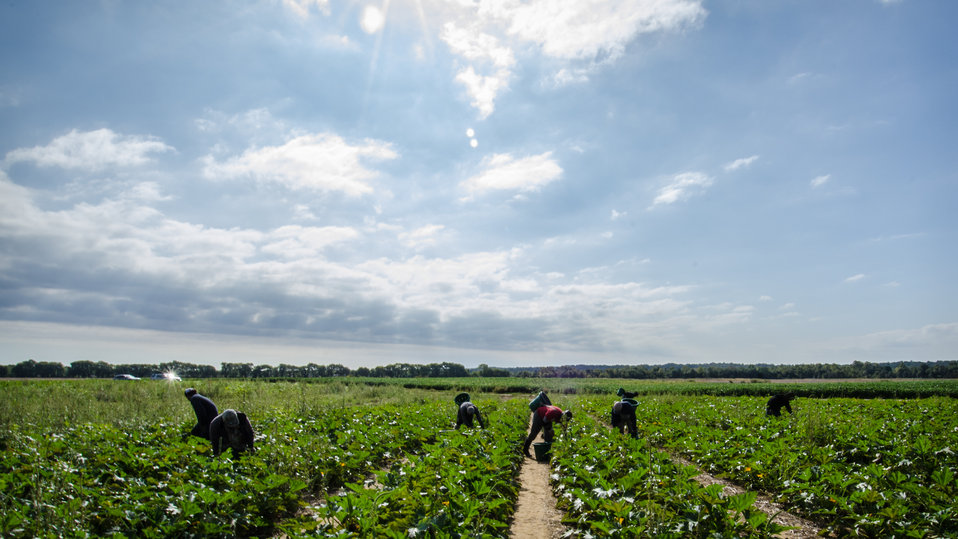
Migrant workers carefully choose and cutoff yellow squash at Kirby Farms in Mechanicsville, VA on Sep. 20, 2013. Kirby Farms is a third-generation family farm that covers 500 acres, and generates produce and grains on a year-around operation.